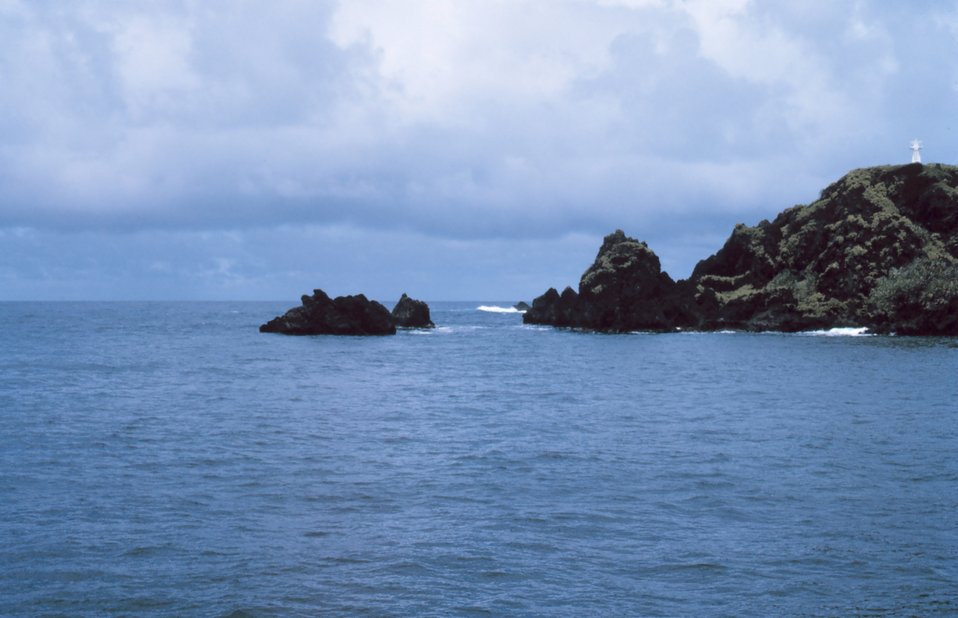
Hona Harbor